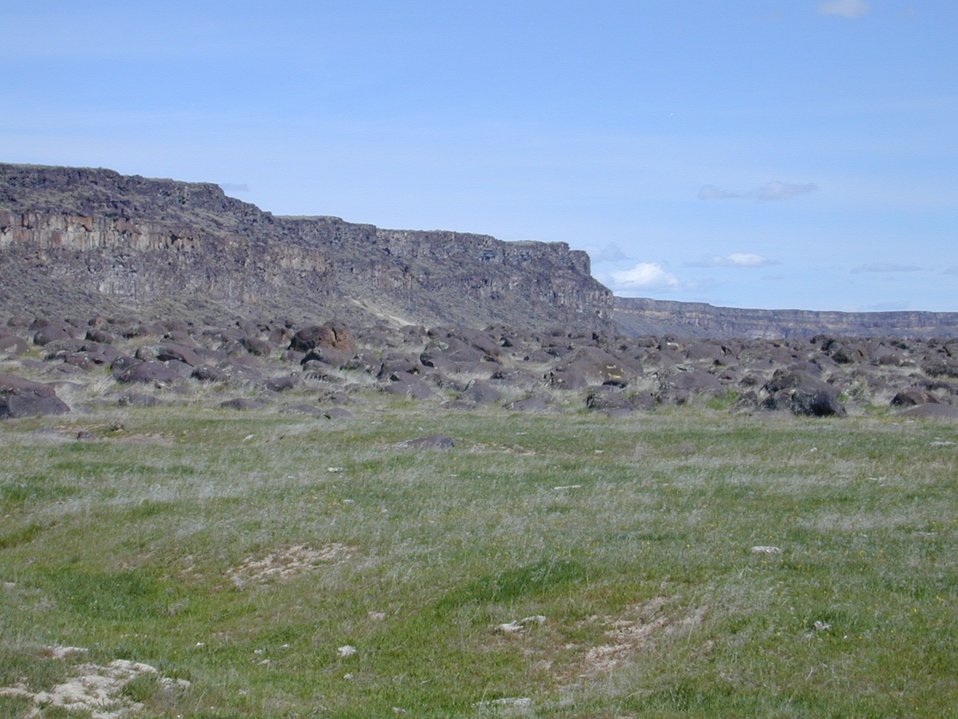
Snake River Birds of Prey National Conservation Area Lower Snake River District LSRD Snake River Canyon